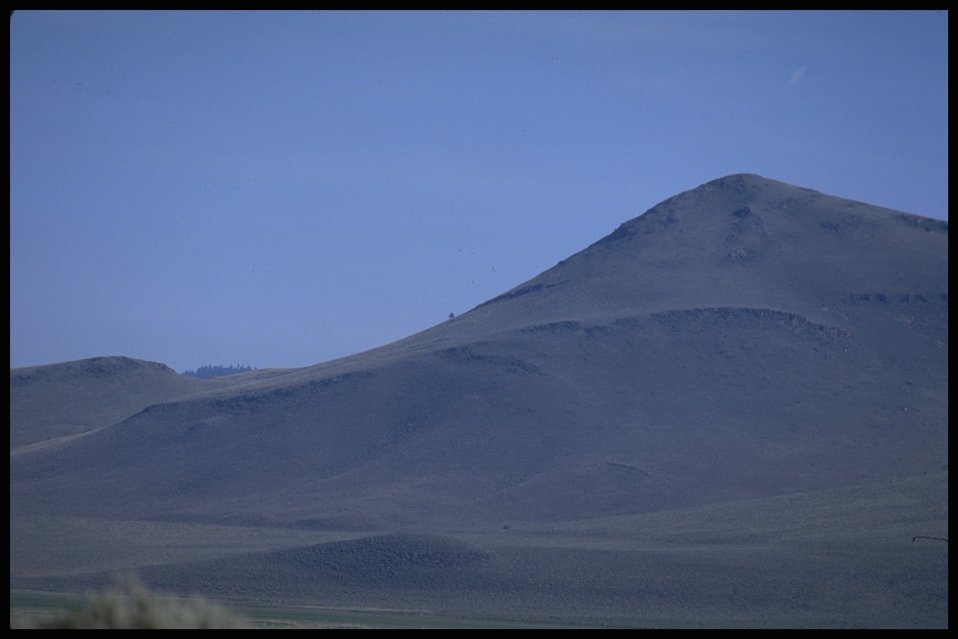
Scenic view of desert, Lakeview District.